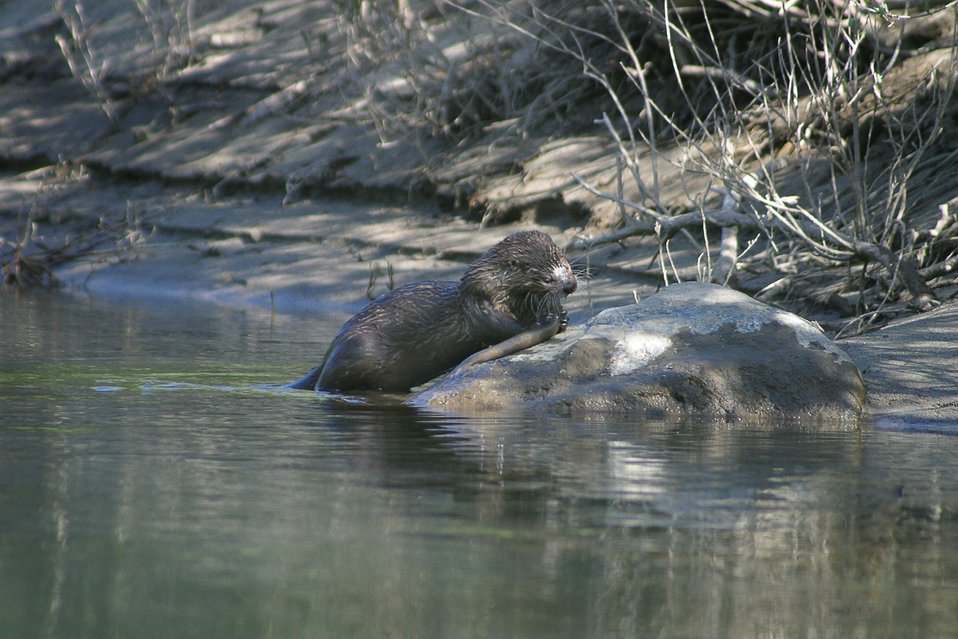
Wild section of the Rogue River from Grave Creek to Foster Bar May 19 to May 22.